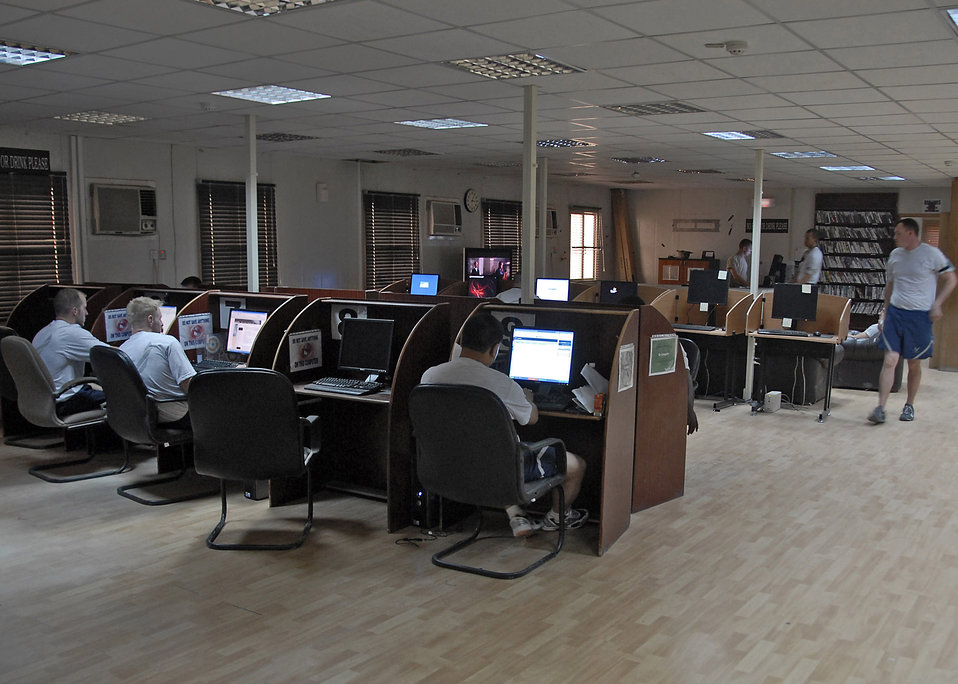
Staying connected

Airmen assigned to a base in Southwest Asia are able to stay connected with family and friends back home, and to ensure their personal affairs remain in order, through a variety of communication resources provided at the morale center.